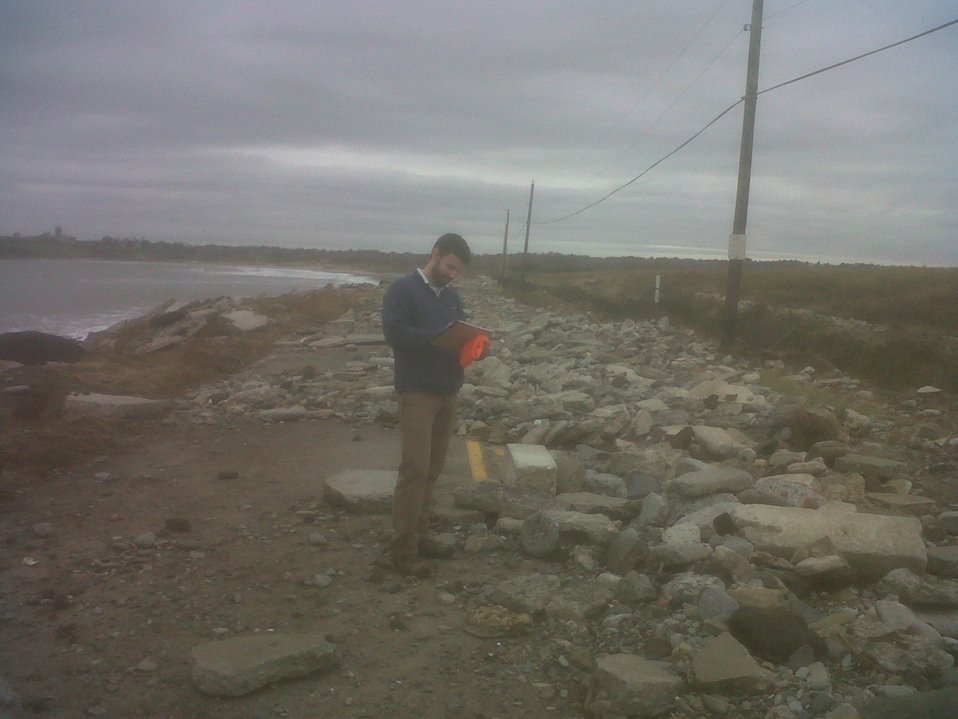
Damage inspection at Sachuest Point National Wildlife Refuge (RI)

Regional Transportation Coordinator Jeff Mast inspects damage at Sachuest Point NWR on Friday 11/2.